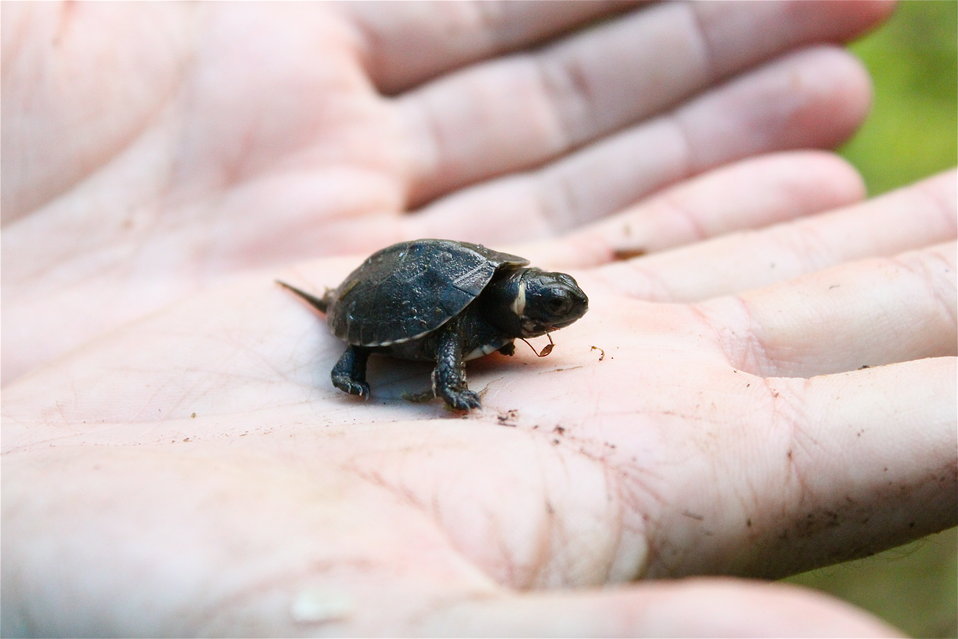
Juvenile bog turtle